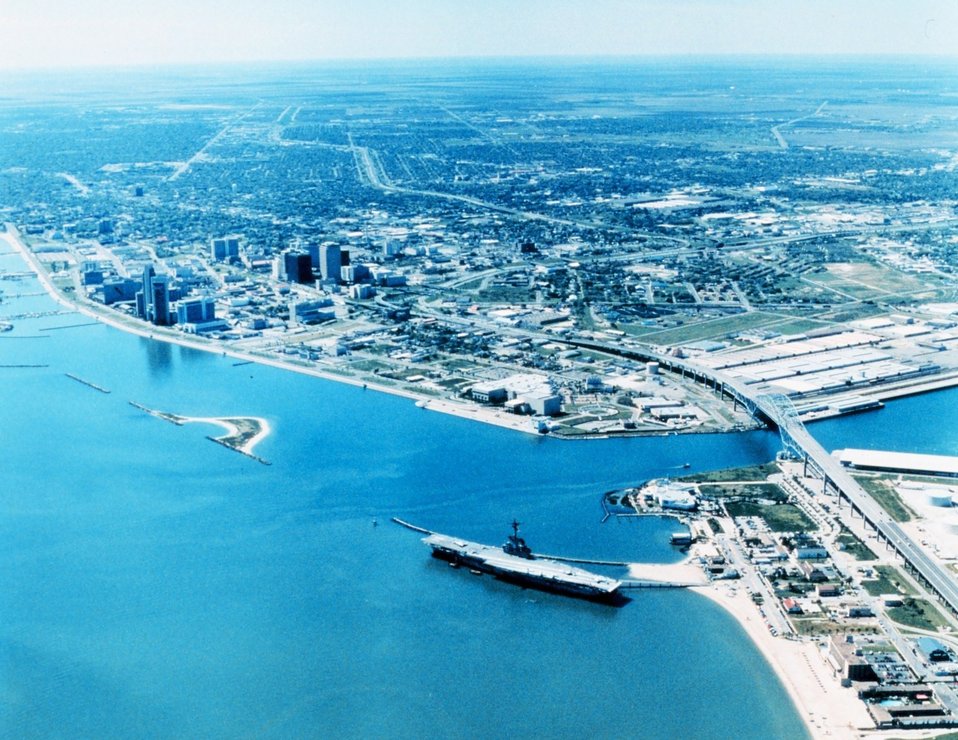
2748 North Latitude 9724 West Longitude.